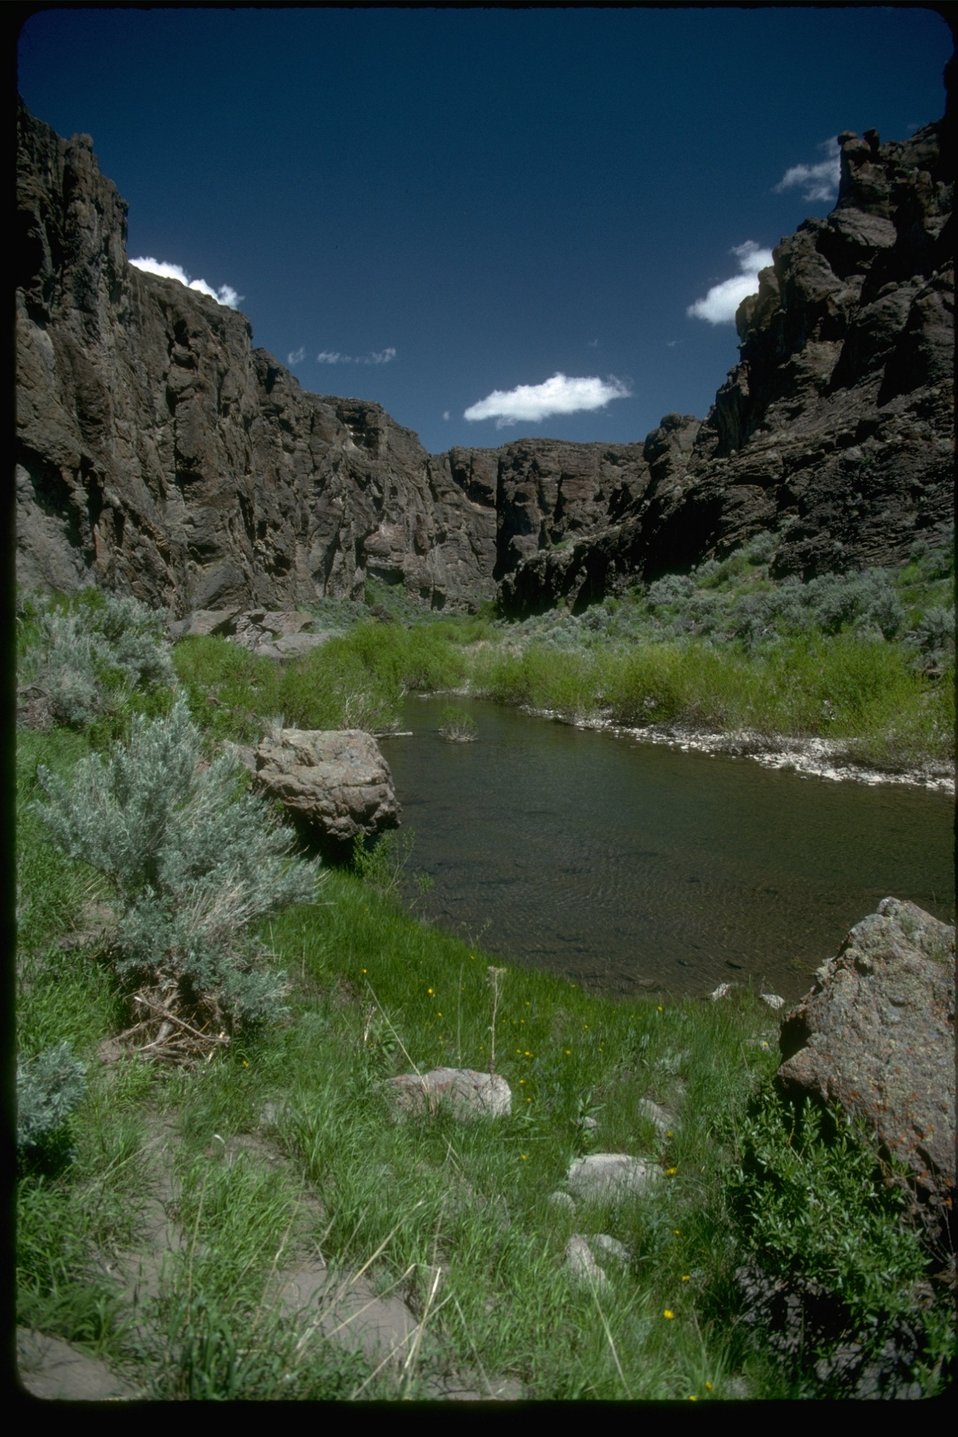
The Upper West Little Owyhee Wilderness Study Area. OR 3-173